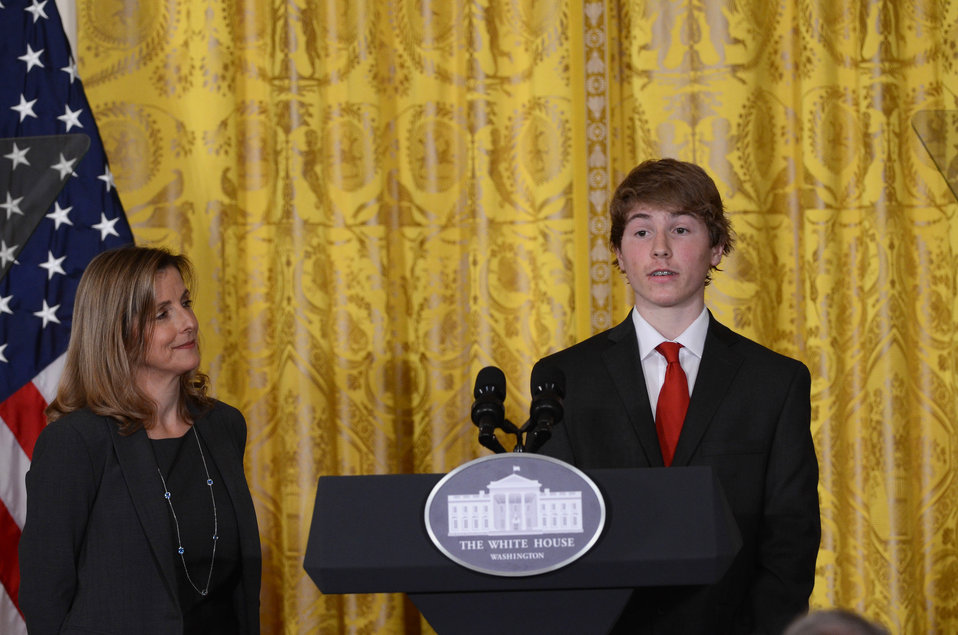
Sam Hammermaster speaks at the White House announcement on the proposed guidelines for comprehensive school wellness policies in the East Room of the White House in Washington, D.C. on Tuesday, Feb. 25, 2014. (Sam’s mother Joanne Hammermaster stands beside him).